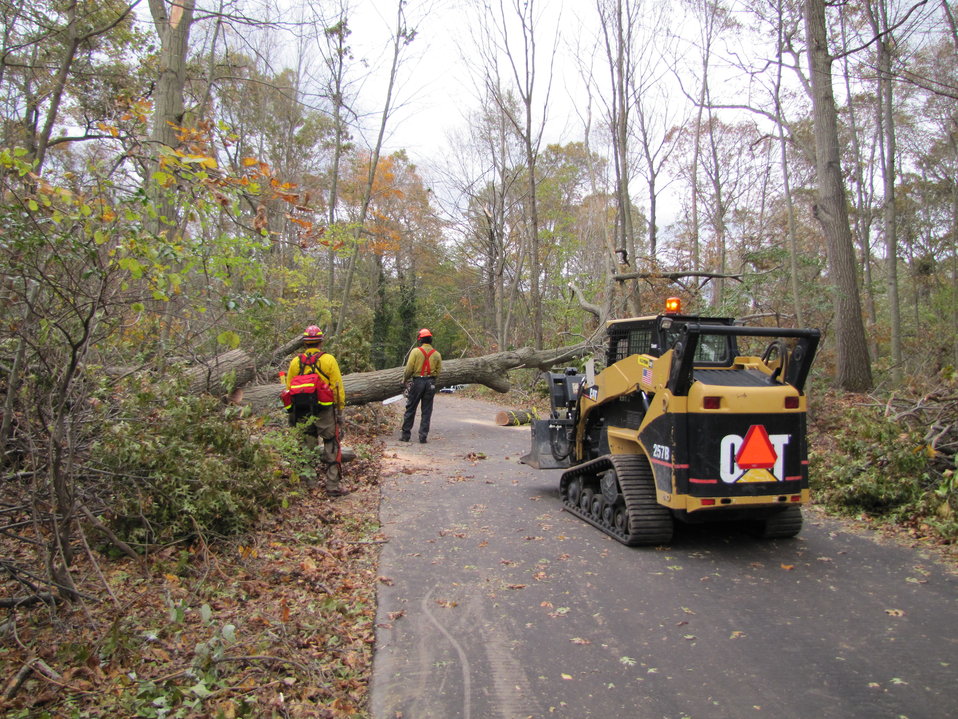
Tree clearing at Target Rock National Wildlife Refuge (NY)

Long Island National Wildlife Refuge Complex staff man heavy equipment to assist the sawyers from Maine refuges.